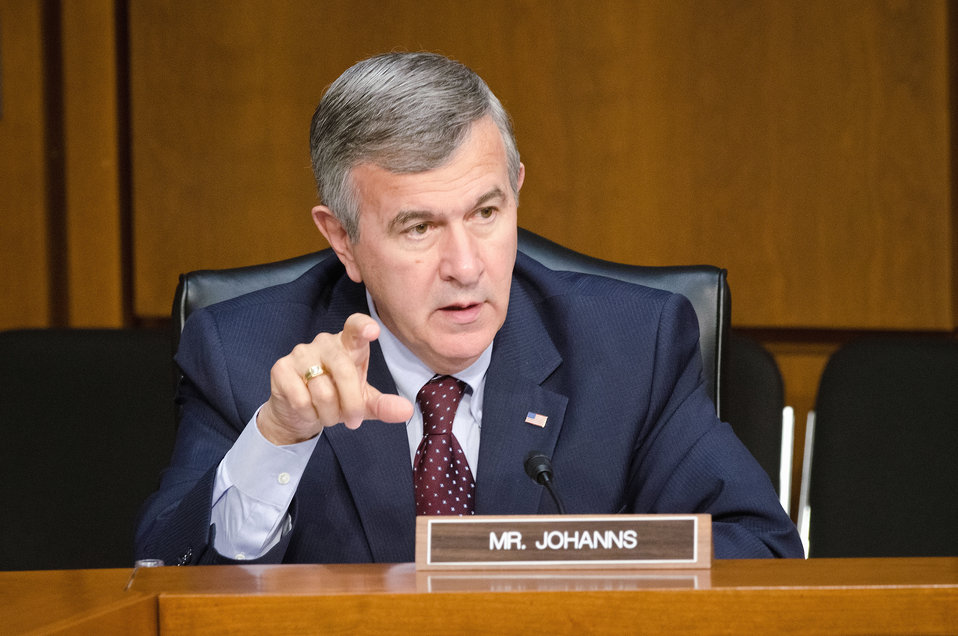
Senator Mike Johanns (NE) poses a question to Agriculture Secretary Tom Vilsack during Secretary Vilsack’s testimony on “Healthy Food Initiatives, Local Production and Nutrition,” before the Senate Agriculture Committee on Wednesday, March 7, 2012 in Washington, D.C.